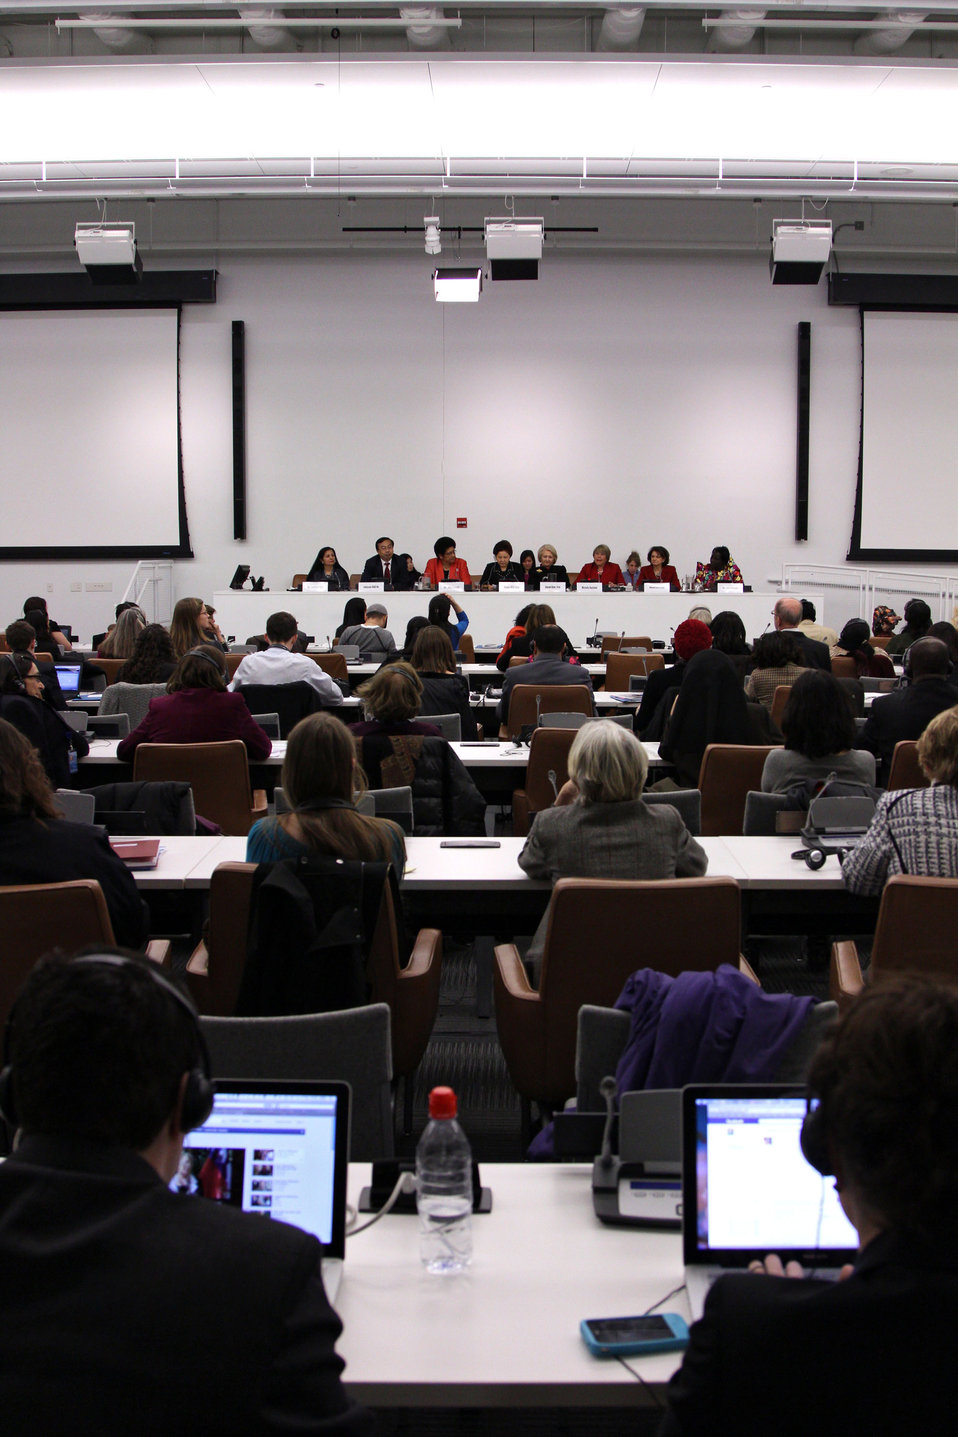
Ambassadors Verveer and DiCarlo Participate in a U.S.-China Panel

Ambassador-at-Large for Global Women's Issues Melanne Verveer and U.S. Deputy Permanent Representative to the United Nations, Ambassador Rosemary DiCarlo, participate in the U.S.-China Panel on Rural Women and Sustainable Development led by UN Women Executive Director Michelle Bachelet in New York, New York, on February 27, 2012.